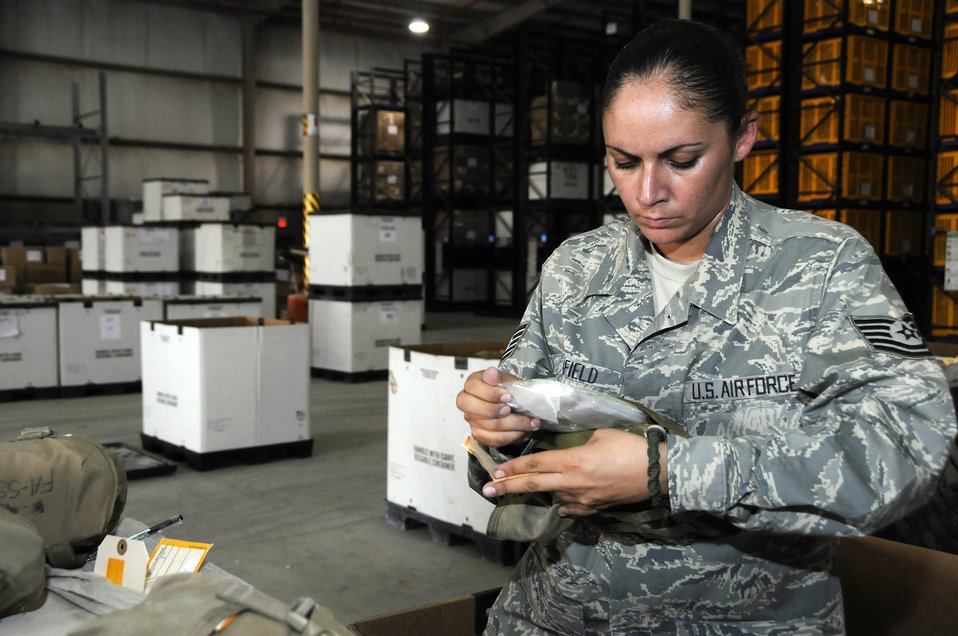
Small group takes small packages, makes huge impact

Tech. Sgt. Magdalena Winfield, verifies each separate item inside of the individual first aid kit Aug. 19. Sergeant Winfield checks the kit to make sure the lot numbers match the numbers on the DD form 1574. The first aid kits are being recertified so they may be reused and put back into use in theater. Sergeant Winfield is assigned to the 379th Expeditionary Logistic Readiness Squadron and is a native of San Antonio, is deployed from Lackland Air Force Base, Texas.